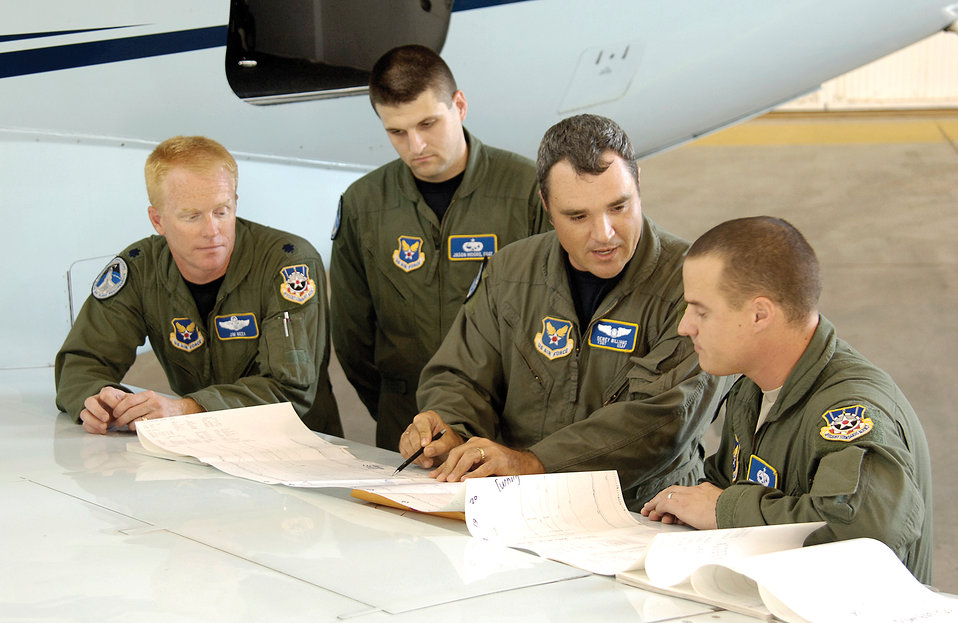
Air Force Flight Standards Agency

Stationed at the Mike Monroney Aeronautical Center in Oklahoma City, Air Force Flight Standards Agency aircrews fly approaches all over the world to certify that runways and equipment are safe and working properly. Reviewing information spread out on the wing of their specially equipped Challenger aircraft are (from left) Lt. Col. Jim Meek, flight inspection pilot; Staff Sgt. Jason Moore, mission specialist trainee; Tech. Sgt. Dewey Williams, mission specialist instructor; and Tech. Sgt. Peter Nichiporuk, mission specialist trainee.